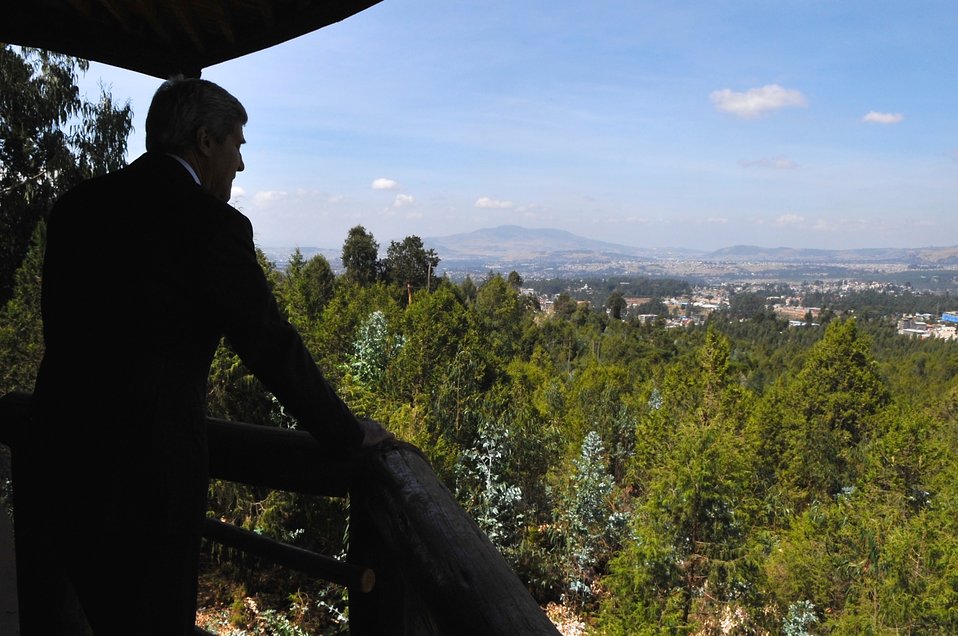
Secretary Kerry Looks Out Over Ethiopian Landscape Before Africa Policy Speech

U.S. Secretary of State John Kerry looks out over the Ethiopian landscape from a botanical garden outside Addis Ababa, Ethiopia before delivering a speech about Africa policy on May 3, 2014.